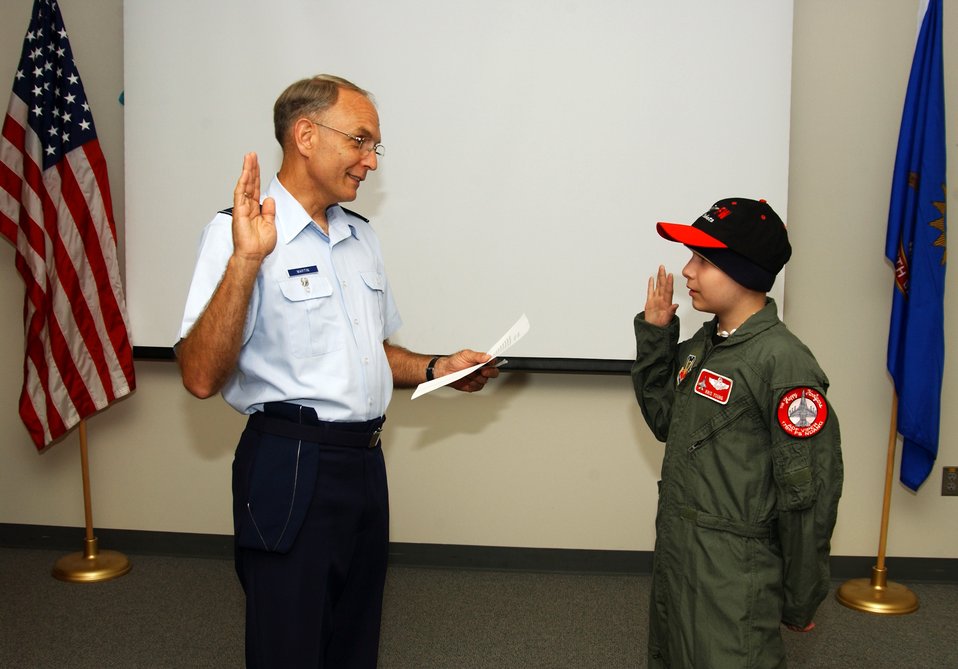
Pilot for a day

Col. Patrick Martin swears in Kris Young as a